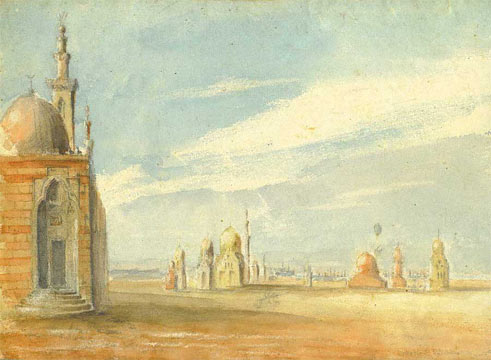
City of the Dead, Cairo, circa 1840, watercolor and pencil on paper by John Prendergast, 9 x 12 inches